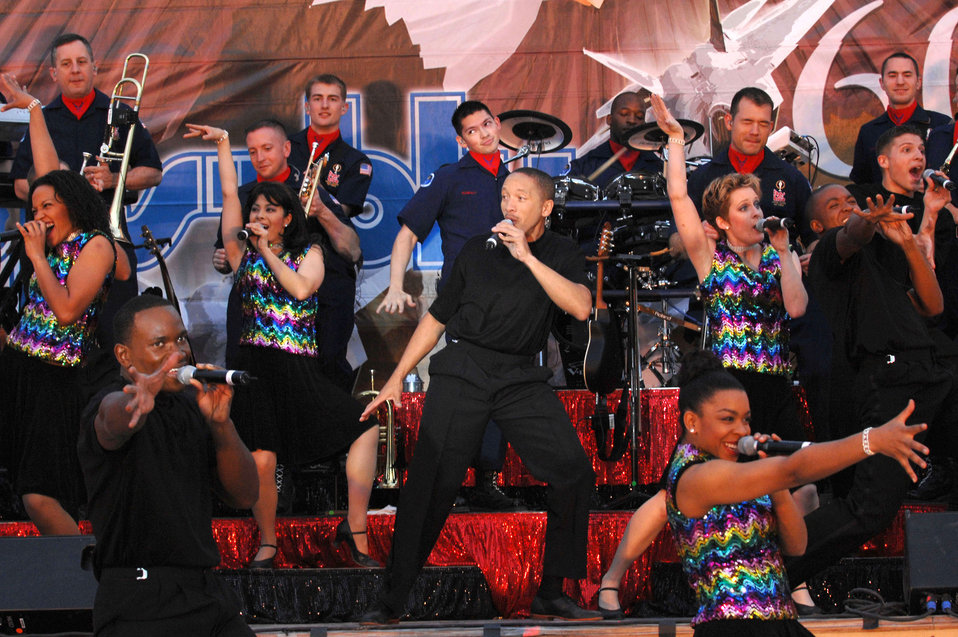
Tops in Blue perform for Airmen in Iraq

Tops in Blue members perform for Airmen and Soldiers April 26 at Kirkuk Air Base, Iraq. Tops in Blue's goal is to enhance mission productivity for Air Force members around the world. Tops In Blue Airmen perform an average of 120 performances at 100 locations worldwide each year.